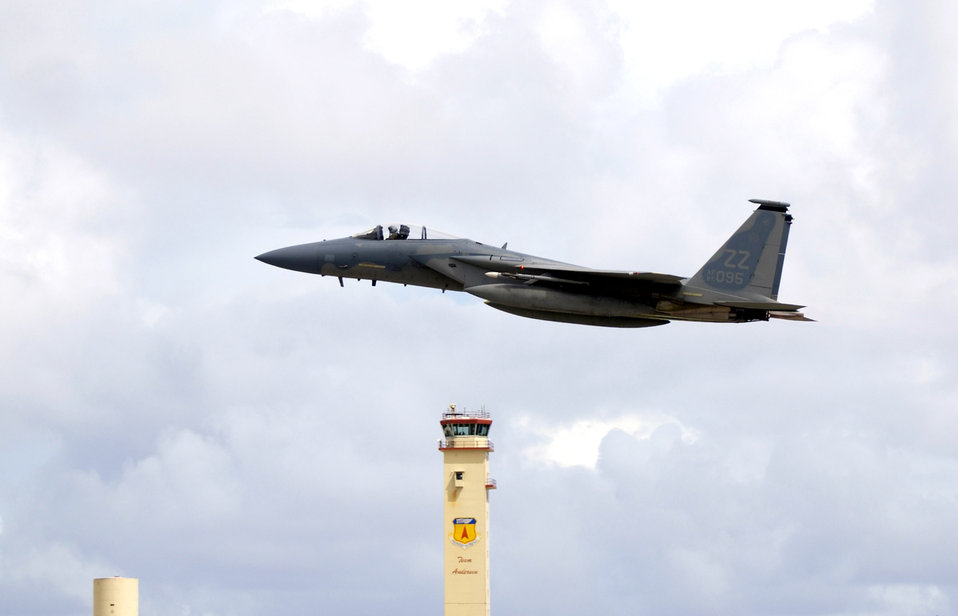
Providing a Valiant Shield

An F-15 Eagle takes off during Exercise Valiant Shield Aug. 8 from Andersen Air Force Base, Guam. Valiant Shield is an exercise that focuses on integrated joint training and interoperability among U.S. military forces while responding to a range of mission scenarios. Held in the Guam operating area, the exercise includes 30 ships, 280 aircraft and more than 20,000 servicemembers from the Navy, Air Force, Marine Corps and Coast Guard. The F-15 is assigned to the 44th Fighter Squadron from Kadena Air Base, Japan.